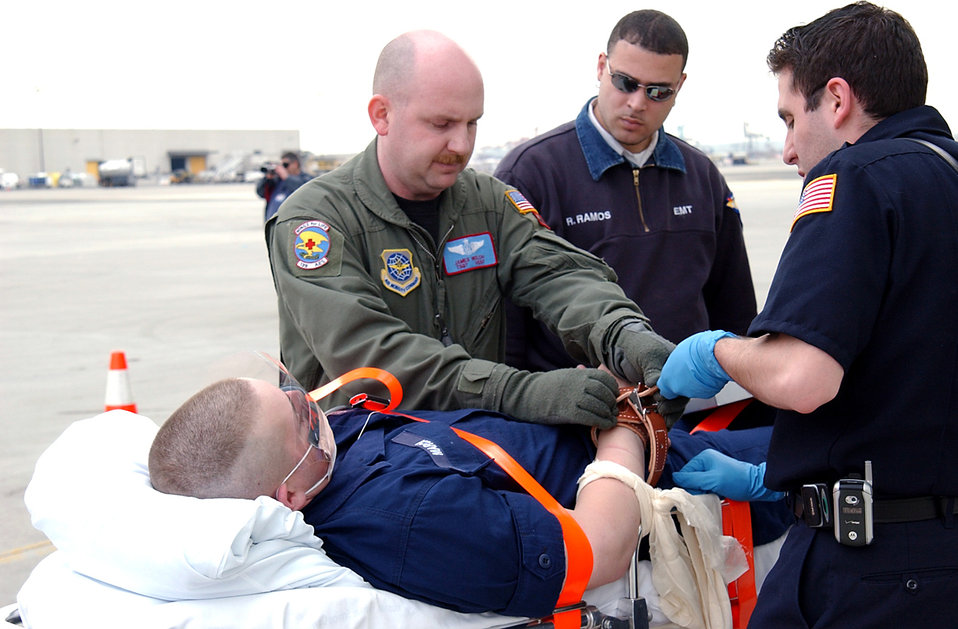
Air Guard medics return from homeland security exercise

NEWARK AIRPORT, N.J -- An Airman with the 139th Aeromedical Evacuation Squadron evaluates a patient for an LC-130 Hercules flight during the U.S. Department of Homeland Security's Top Officials 3 exercise. The exercise was one of five full-scale, congressionally directed, weapons of mass destruction exercises taking place throughout Connecticut and New Jersey.